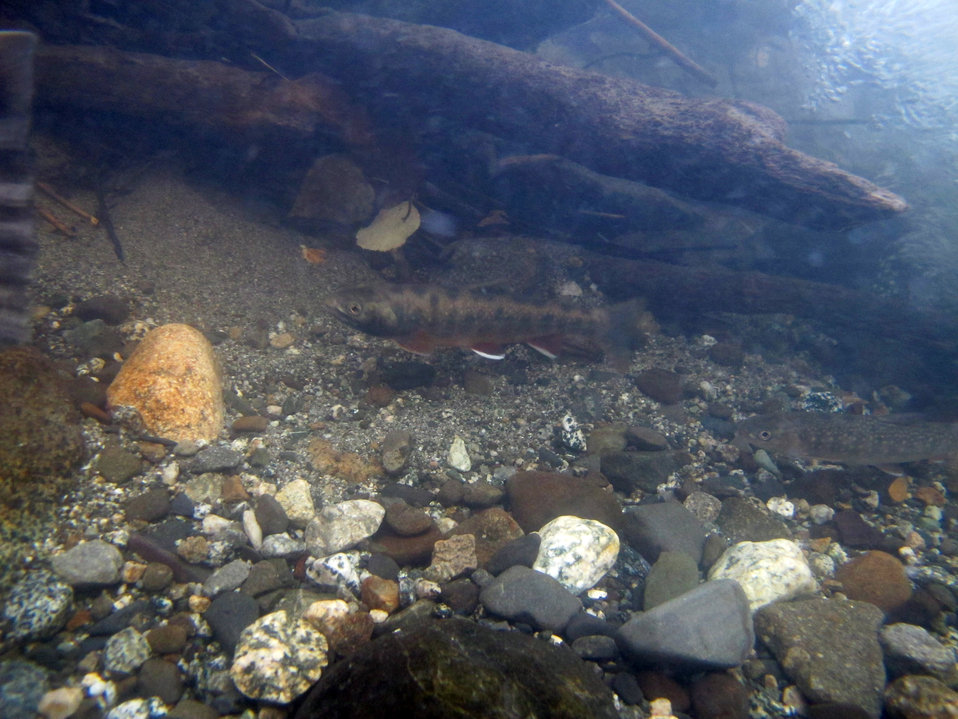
Dolly Varden char follow a coho salmon (tail barely visible, left) upstream Swiftwater Creek in the Mat-Su valley of Alaska. USFWS / Katrina Mueller